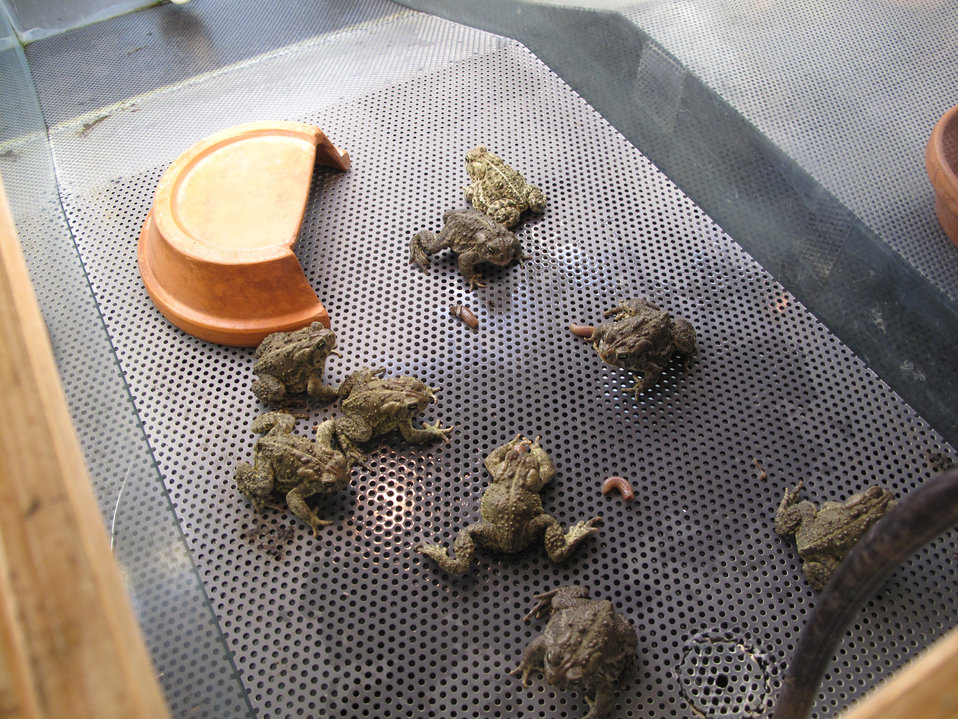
Wyoming Toads Eating Worms

Feeding Time!! The toads enjoy live worms.